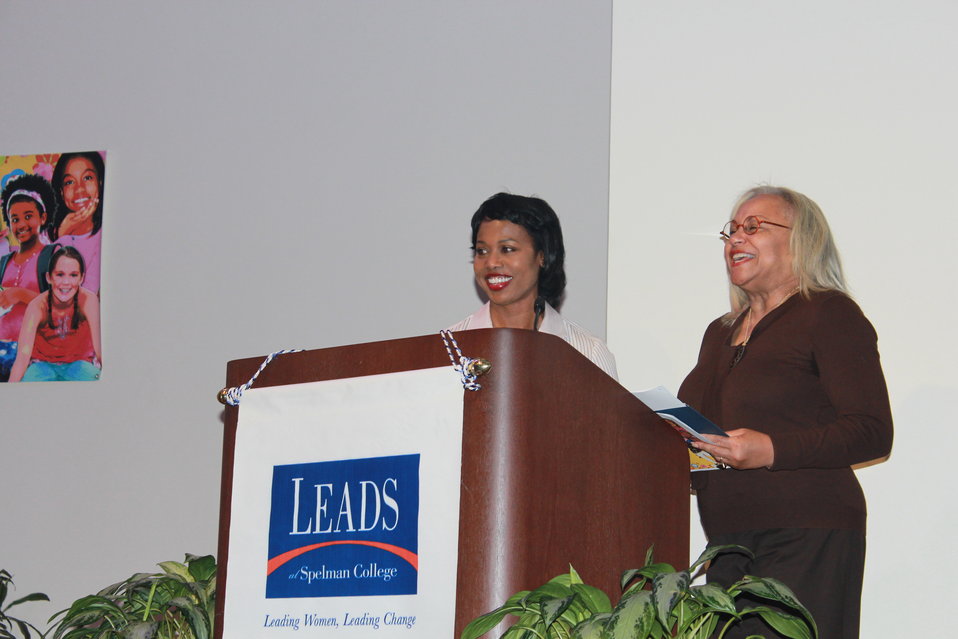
Spelman Girls Institute Nov 2012

Dot Harris, Director of the Office of Economic Impact and Diversity, provides welcome remarks about the economic advantages for women and girls in STEM.